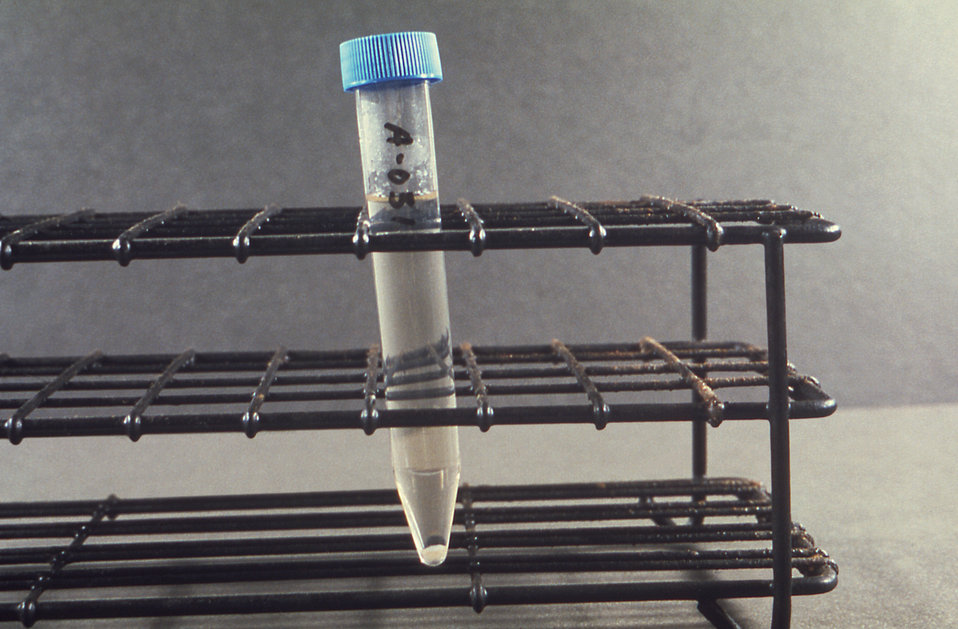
This photograph depicts a single 15ml conical-based centrifuge tube standing upright in a test tube rack, which contained an amniotic fluid cell culture that had been centrifuged, producing a cell pellet resting at the bottom tip of the tube.